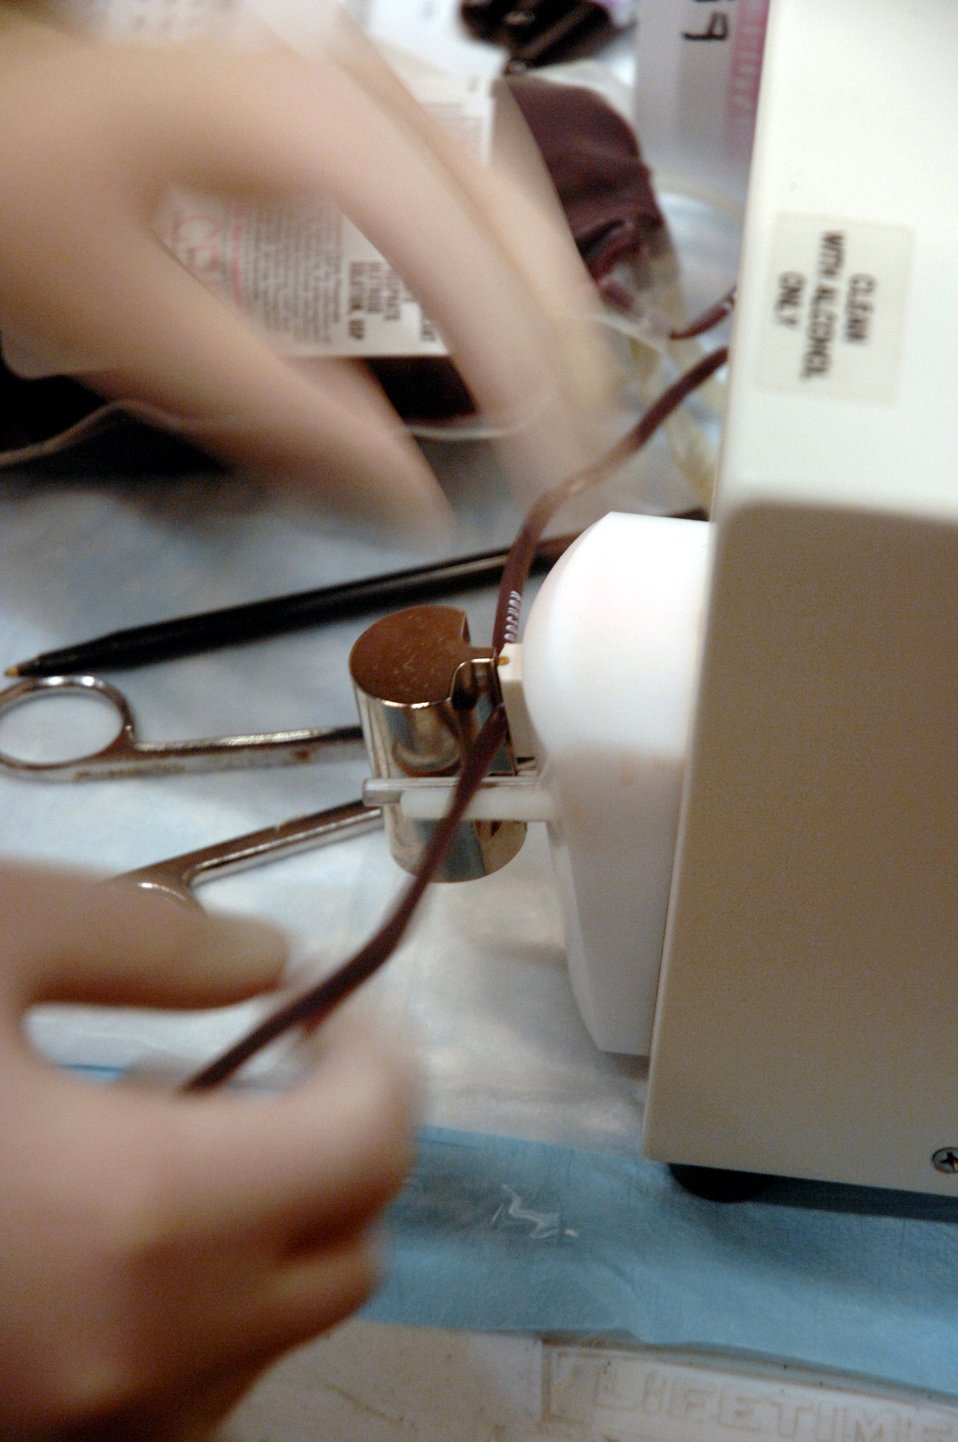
Blood donation

A member of the Alaska Blood Bank creates segments in a blood sample during the mobile blood drive Nov. 21 at Eielson Air Force Base, Alaska. The segments are used by a hospital to double check the blood type contained in the bag to make sure it matches what is on the label.